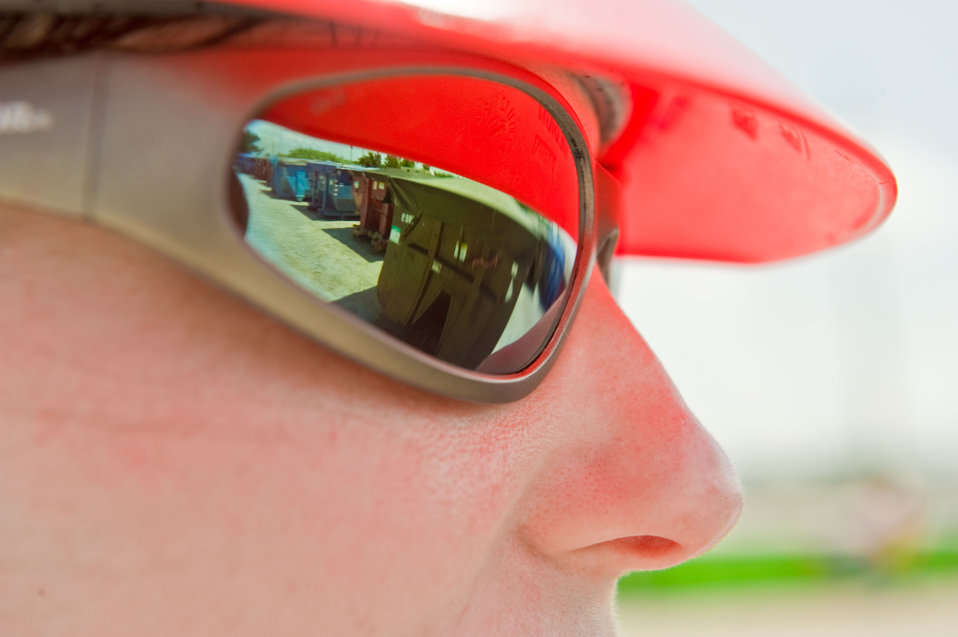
August 7, Lines of roll off containers collect oil waste

EPA and the responding agencies are working to ensure that oil waste is handled in a way that is protective of work crews and also protectively disposed of at a licensed waste facility.